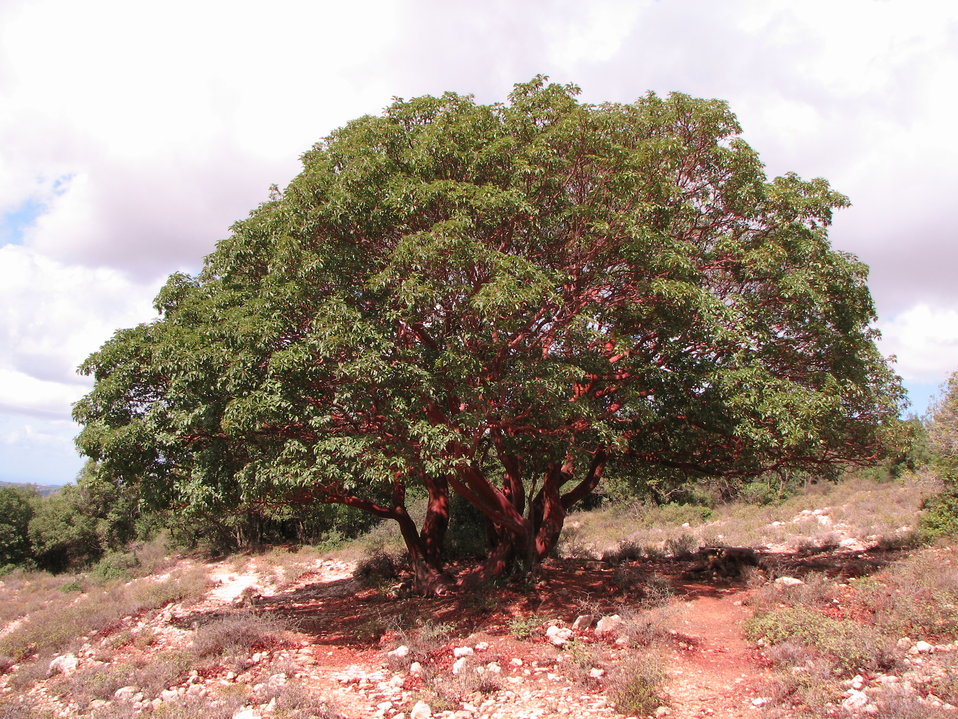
עברית: קטלב מצוי בגליל העליון